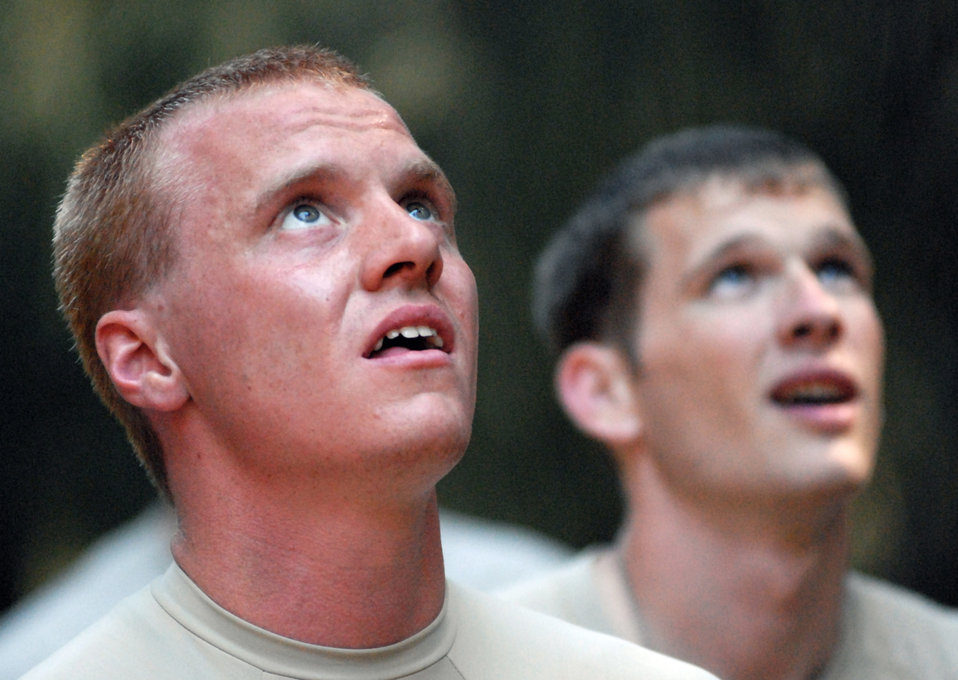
Airmen vie for slots in Army Air Assault Course

Senior Airmen Ray Burk and Jordan Miller watch as their fellow Airmen complete an obstacle course during try-outs for the Army Air Assault Course Feb. 1, 2011, in Wahiawa, Hawaii. Sixteen security forces members are scheduled to attend the two-week Air Assault Course beginning May 5, 2011. Airmen Burk and Miller are assigned to the 647th Security Forces Squadron.